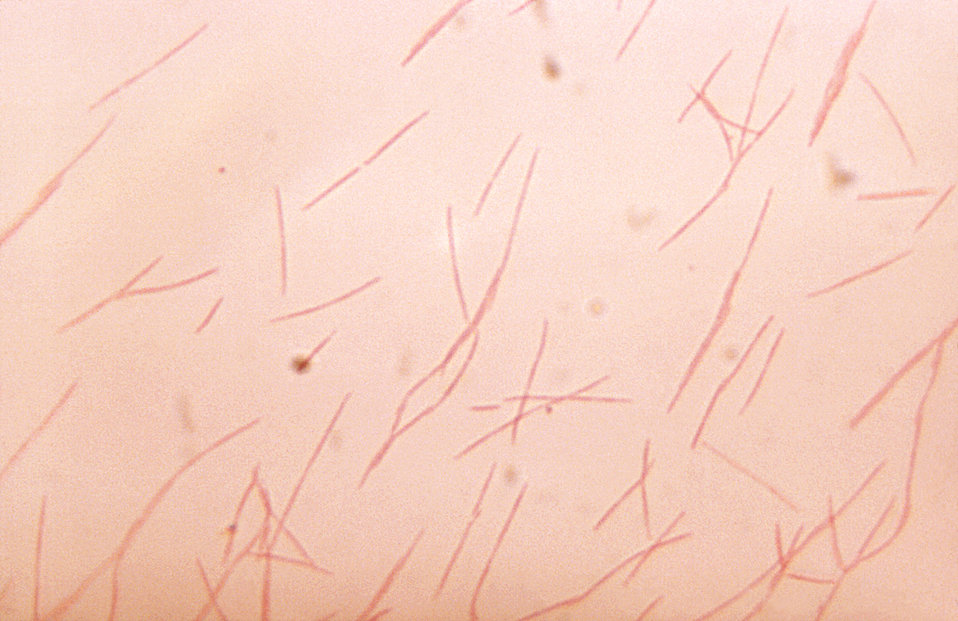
This is a photomicrograph of Fusobacterium nucleatum cultured on blood agar for 48 hours.